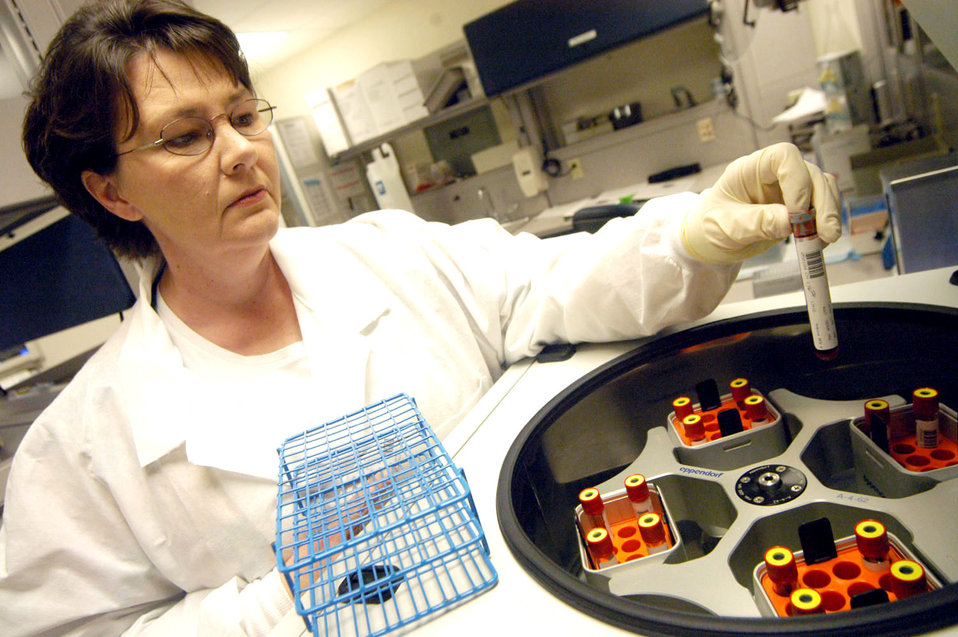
Analyze this

ROBINS AIR FORCE BASE, Ga. -- Penny Seals loads blood samples into a centrifuge to run for chemistry analysis. Lab technicians assigned to the 78th Medical Group support the group's various departments, analyzing hundreds of fluid and tissue samples each day to help physicians diagnose patient ailments. She is microbiology supervisor for the lab.